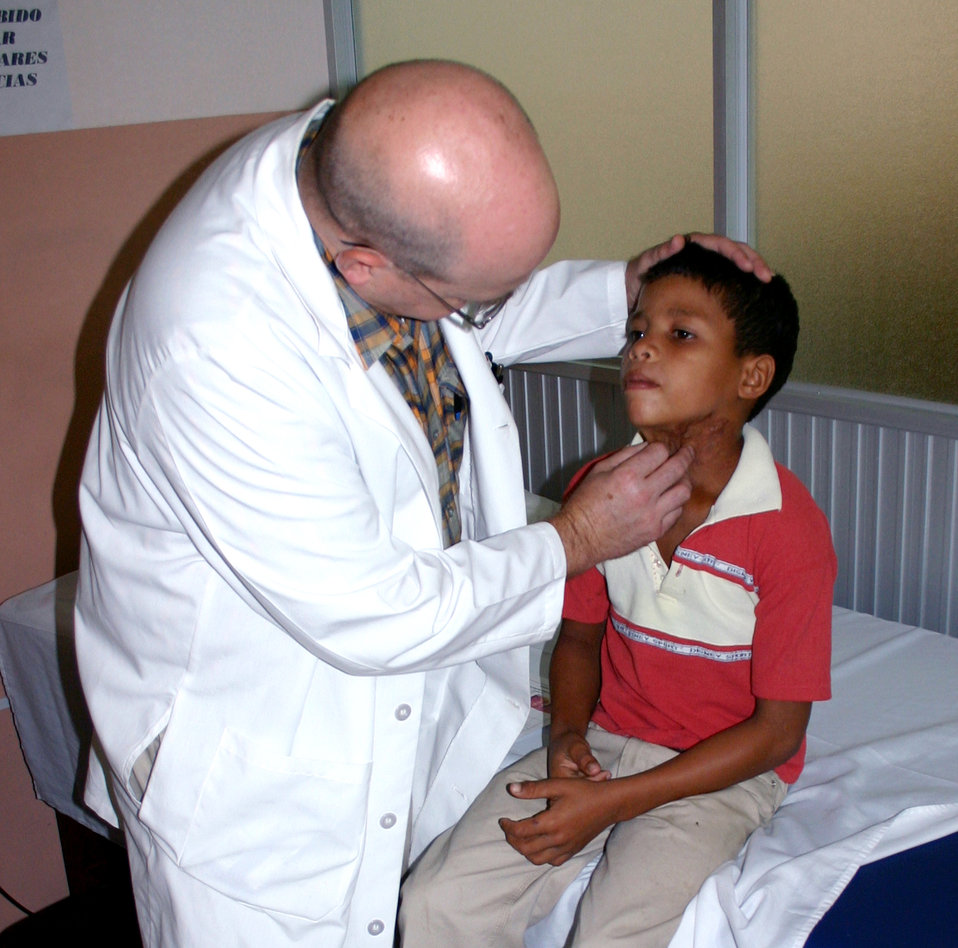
Medical team conducts mission in Ecuador

Col. (Dr.) Charles Hardin checks the burn injuries of an Ecuadorian boy during a screening with the first Medical Readiness Training Exercise team in Esmereldas, Ecuador. Colonel Hardin is a surgeon at Wilford Hall Medical Center at Lackland Air Force Base, Texas.